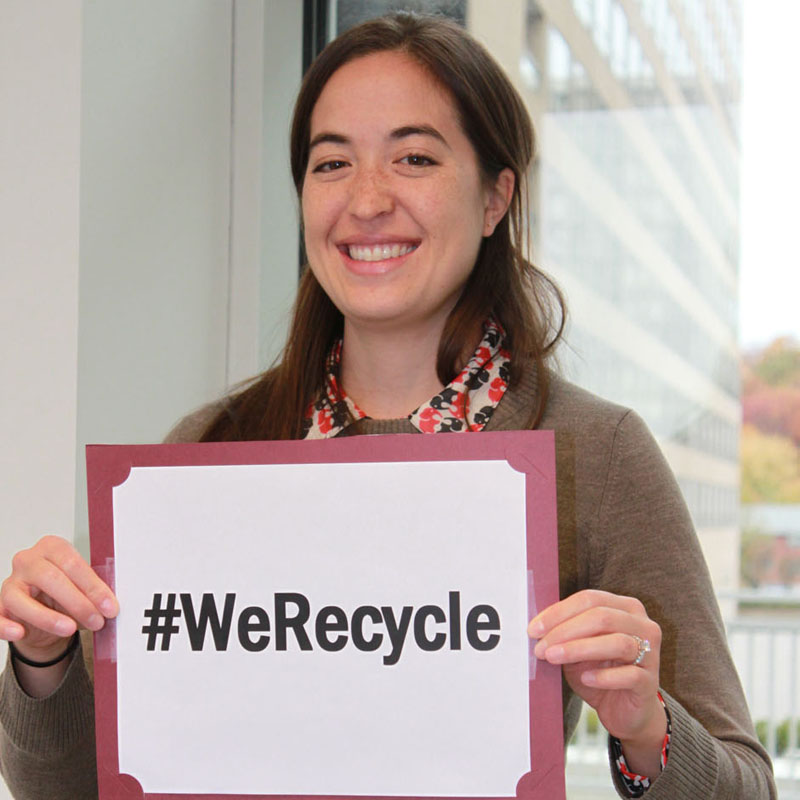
IMG 7777-Kristen Gunthardt-ORCR

At EPA, #WeRecycle. Learn how you can too: www2.epa.gov/recycle